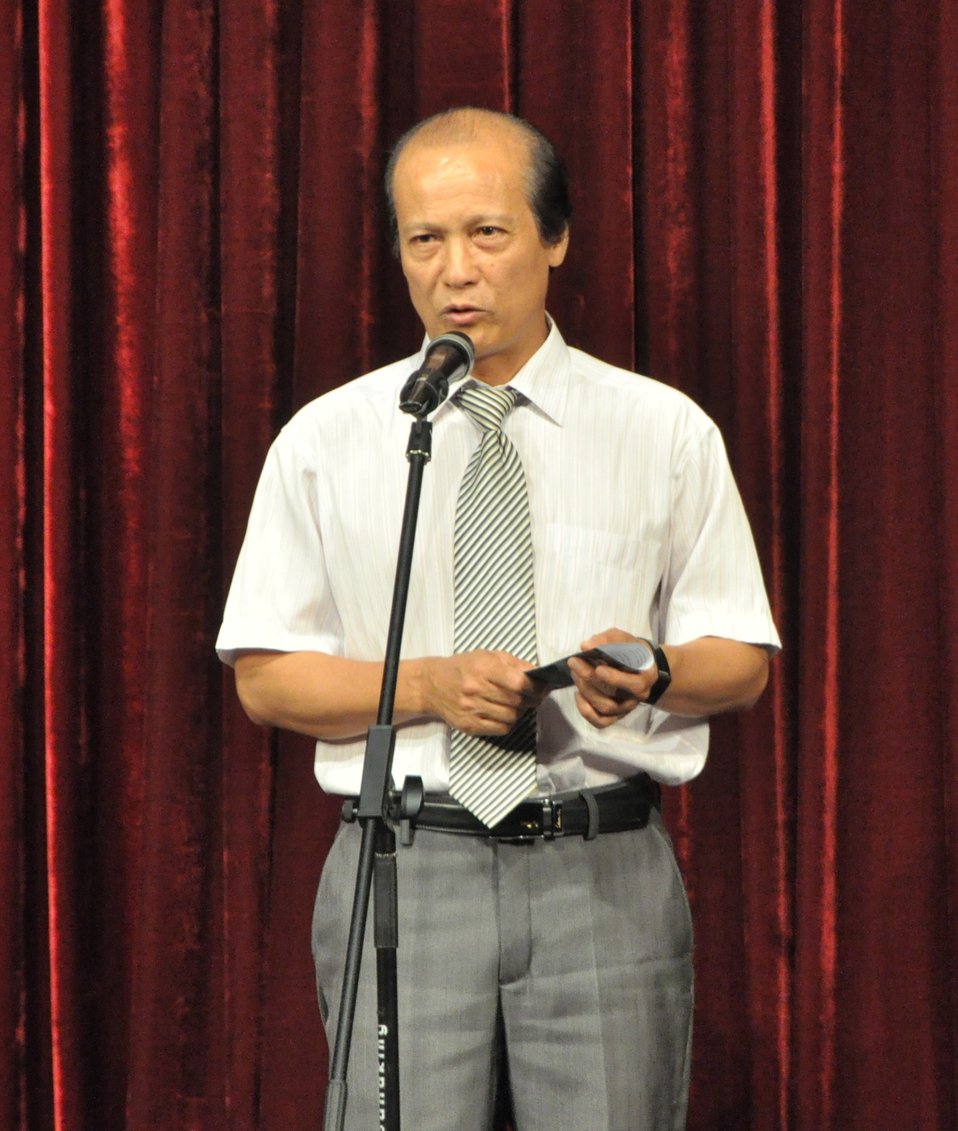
PEPFAR Musical Questions and Exclamations